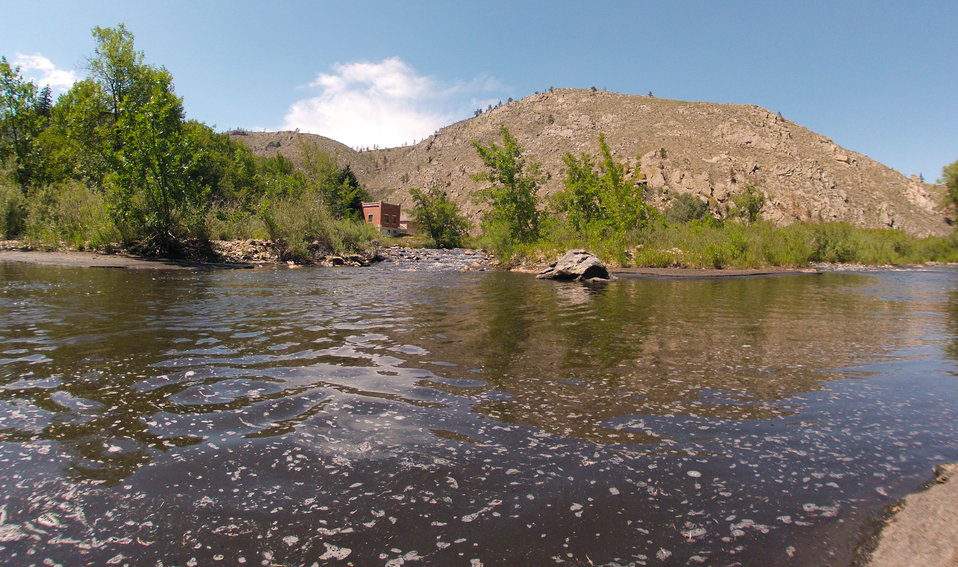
A confluence of two tributaries, the Cache la Poudre and the North Fork of the Cache la Poudre, near Seaman Reservoir, 60 miles north of Denver, Colorado on Friday, July 20, 2012, have been transformed from clear mountain waters to a nearly black water, heavily laden with ash, silt, and burnt debris that was recently washed down mountainsides by thunderstorms. The mountainsides were burned by the Hewlett Gulch Fire (May 14, 2012), in the Poudre Canyon area. At its peak more than 400 firefighters were battling fires pushed by 50 mph winds. When the last embers were cooled, more than 12-square miles lay blacked at a cost of approximately 3.2 million dollars. The aerial distribution of straw has successfully kept nearby Seaman Reservoir clean for the drinking water of the City of Greeley. Forest Service lands receive straw, while private and other lands receive a seed mix and straw to promote ground cover plant growth on ash-covered lands. In total, 1,800 tons of straw will be applied during the 14-day operation. One quarter of the cost was paid by the City of Greeley and the U.S. Department of Agriculture funded the remainder.